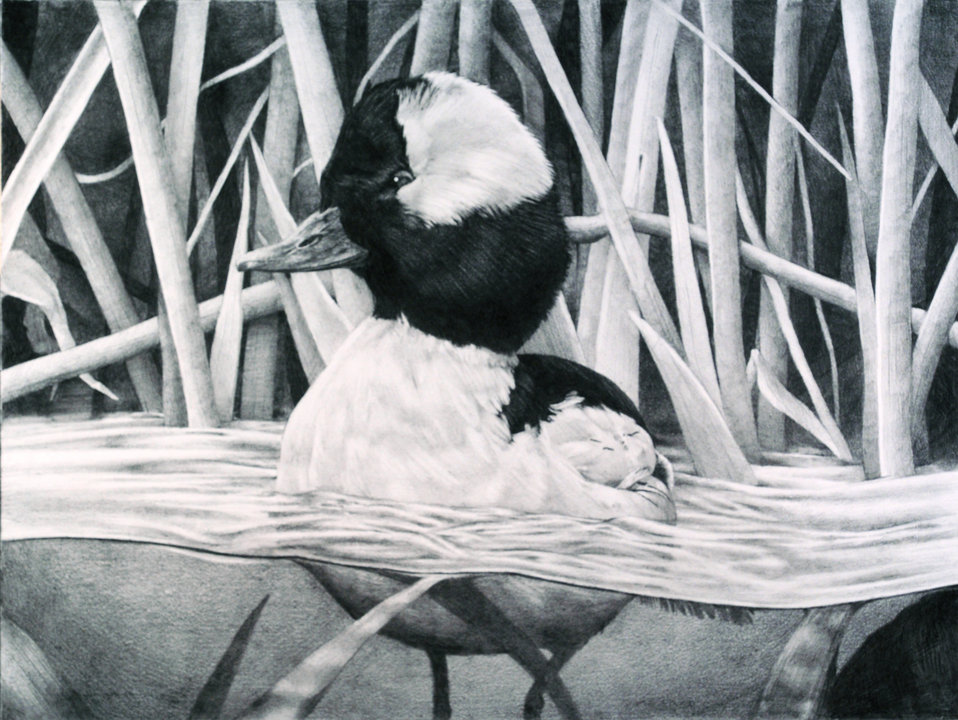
Minnesota

2012 Jr Duck Stamp Program
State Best of Show
Minnesota